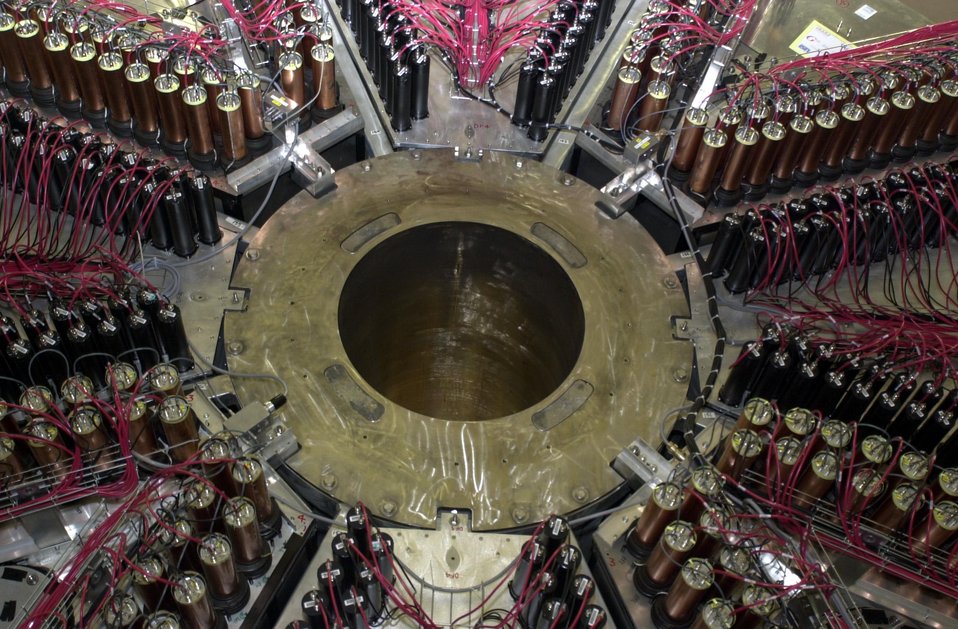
CLOSE-UP OF THE CENTER OF THE GO DETECTOR SHOWING THE PHOTO MULTIPLIER TUBES.

THE JEFFERSON LAB IS BUILT FOR NUCLEAR PHYSICS RESEARCH. SCIENTISTS USE SUPERCONDUCTING ELECTRON ACCELERATING TECHNOLOGY AT THE LAB'S CONTINUOUS ELECTRON BEAM ACCELERATOR (CEBAF) TO CONDUCT EXPERIMENTS. HIGH ENERGY ELECTRON BEAMS FROM THE ACCELERATOR ALLOWS SCIENTISTS TO PROBE THE ATOM'S NUCLEUS, REVEALING HOW QUARKS MAKE UP PROTONS, NEUTRONS, AND THE NUCLEUS ITSELF.